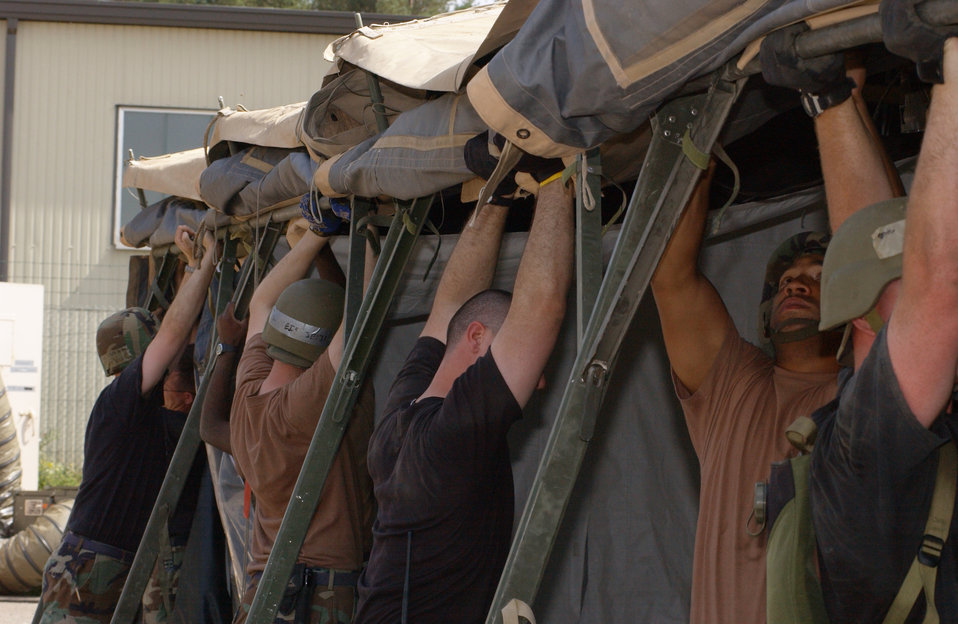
Silver Flag

RAMSTEIN AIR BASE, Germany -- Participants in a Silver Flag exercise set up tents here July 21. Silver Flag teaches combat support to specialists from active-duty units, the Air National Guard, Air Force Reserve Command and allied nations. Students hone their combat skills such as repairing bomb-damaged runways, setting up base facilities, disposing of explosives and similar wartime survival skills. Simultaneously, units also practice providing food service and lodging under simulated wartime conditions.